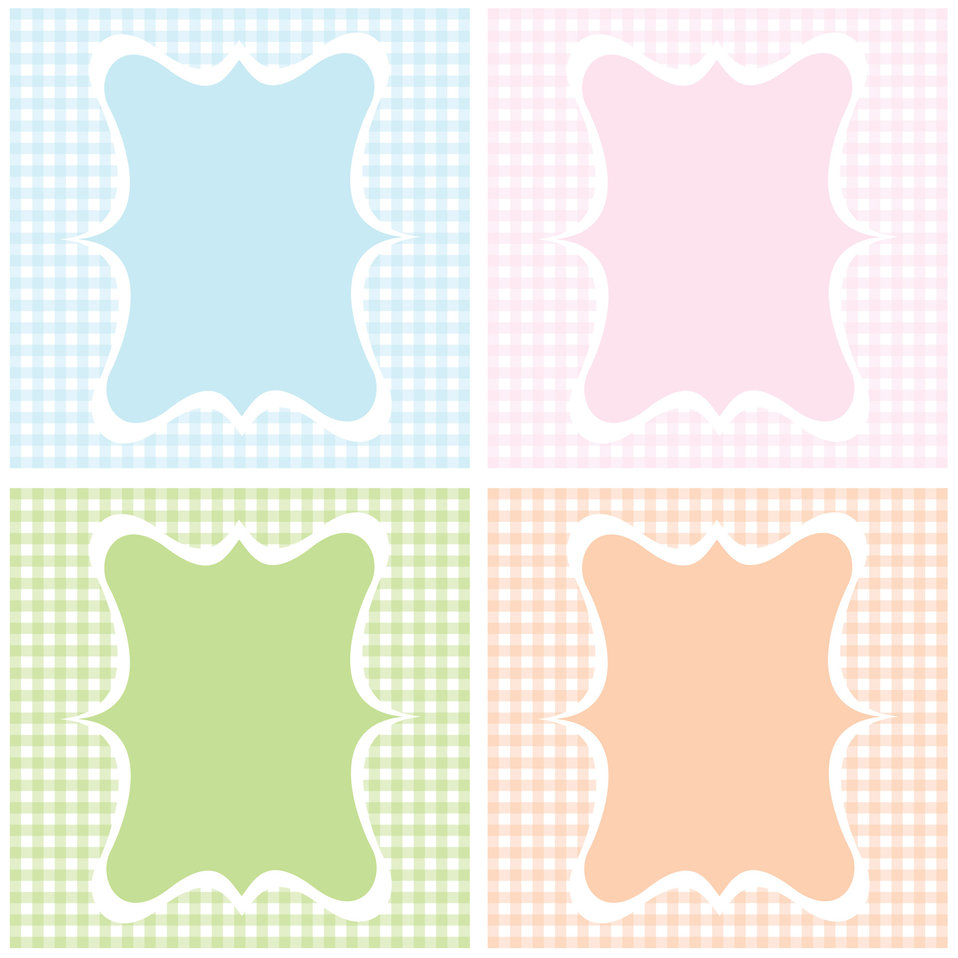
Check gingham frames

Gingham frames set.